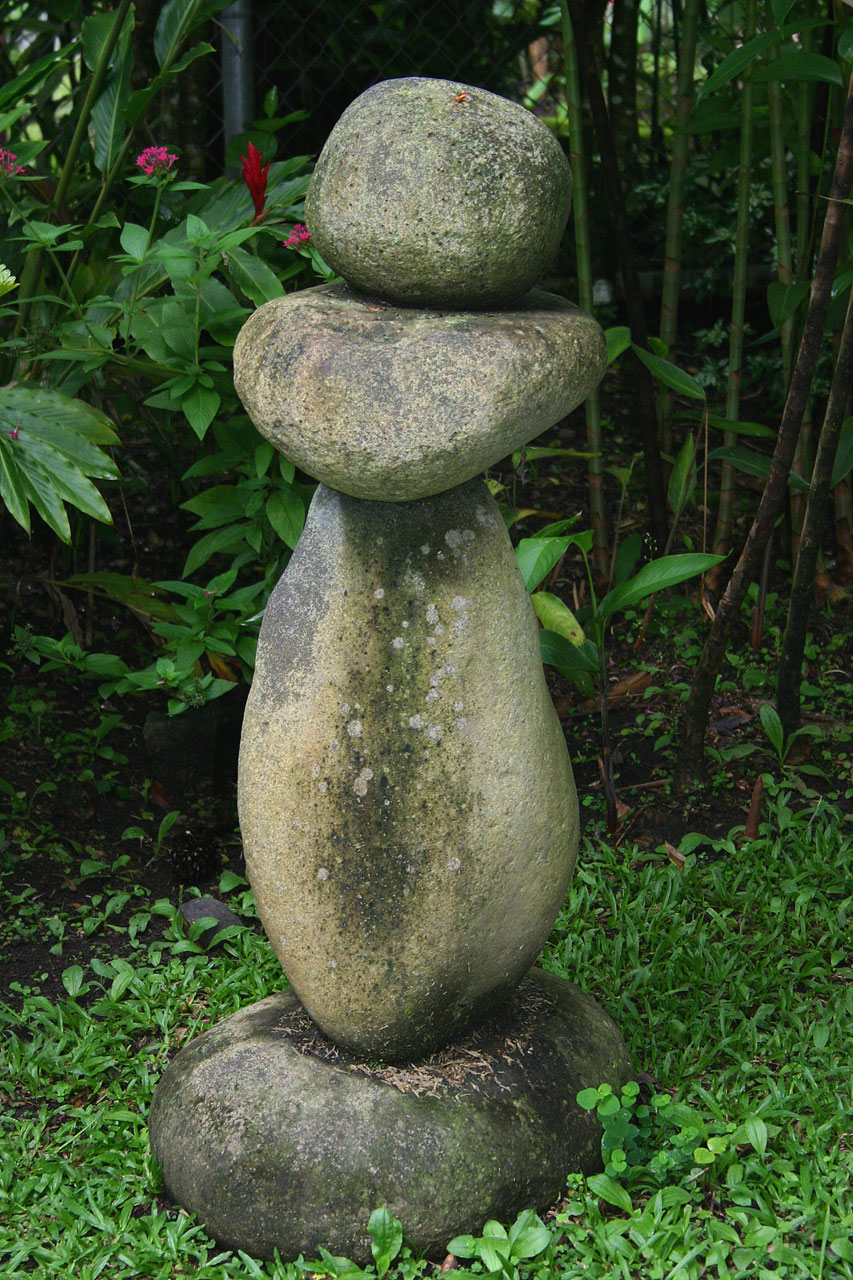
Stones stacked

Stack of stones.